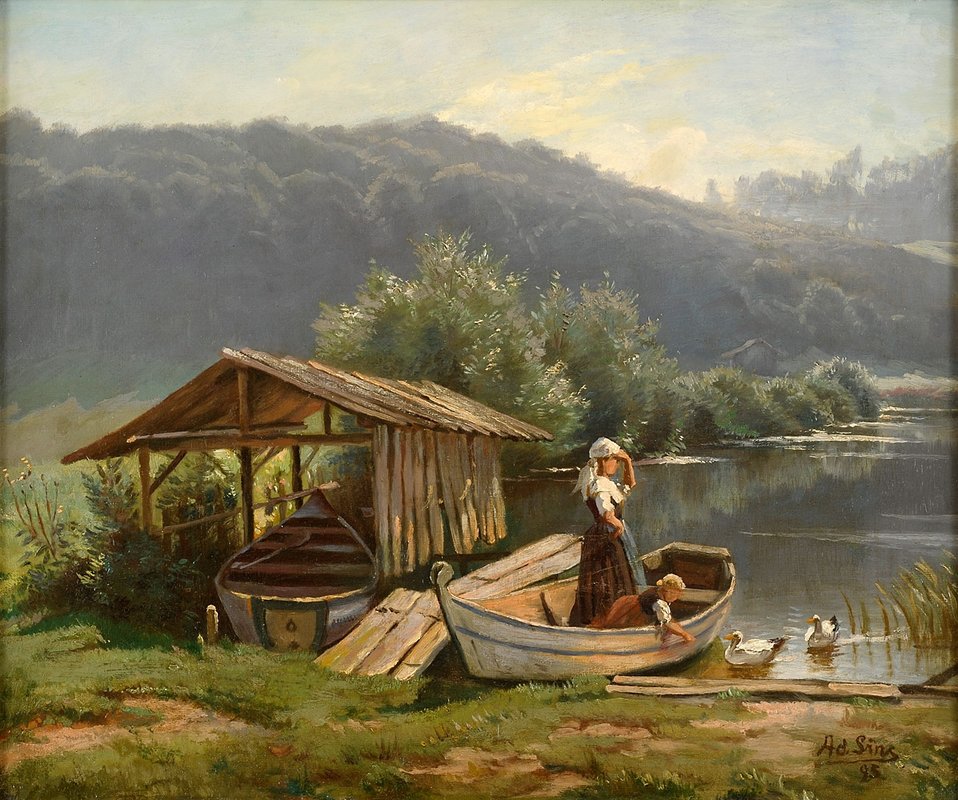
Adolf Lins Sommerliche Seenlandschaft 1885